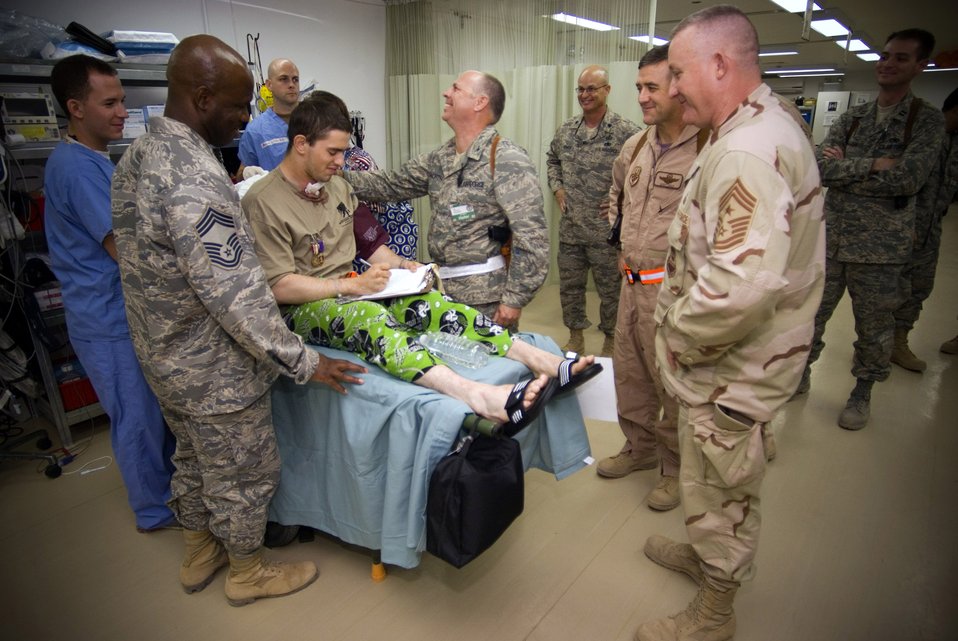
Airman survives 'million-dollar' wound

Airman 1st Class Michael Brady writes a letter home to his family Oct. 14 in the company of his fellow Airmen at the Air Force Theater Hospital at Balad Air Base, Iraq. Airman Brady was augmenting the Army in a non-traditional